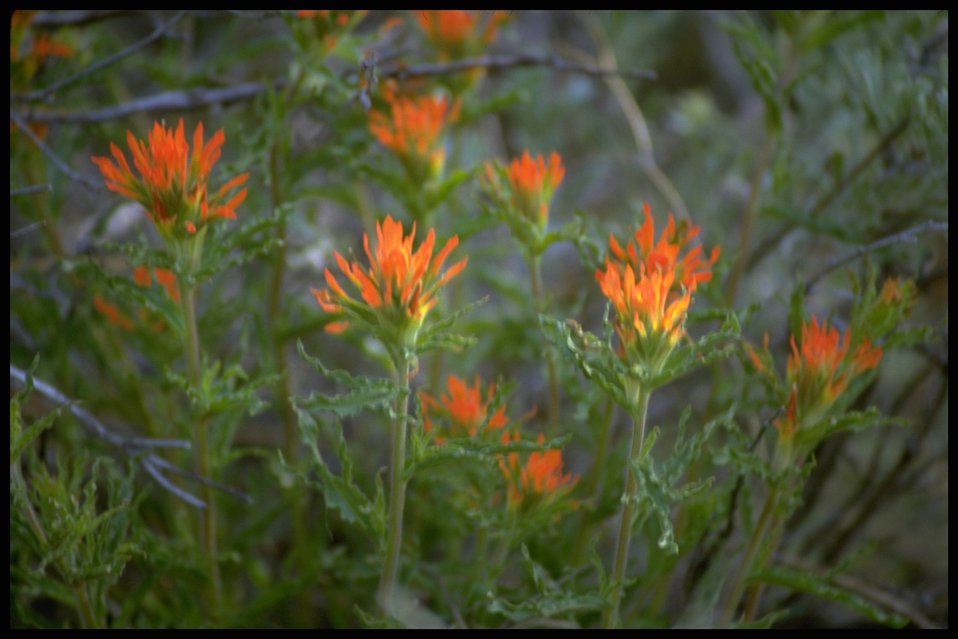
Indian Paintbrush wildflower habitat, Lakeview District.